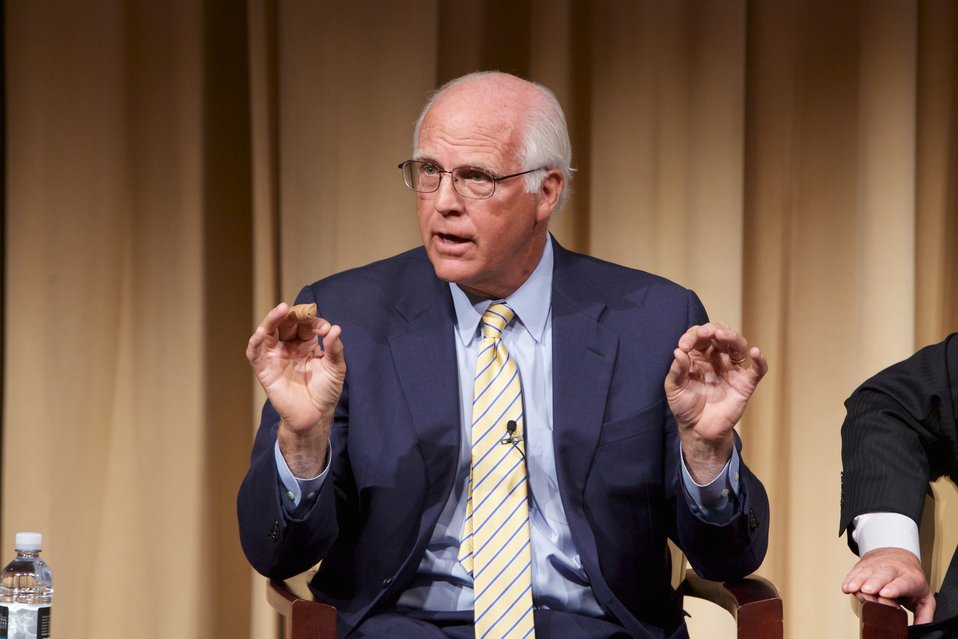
The Role of Congress in International Crises